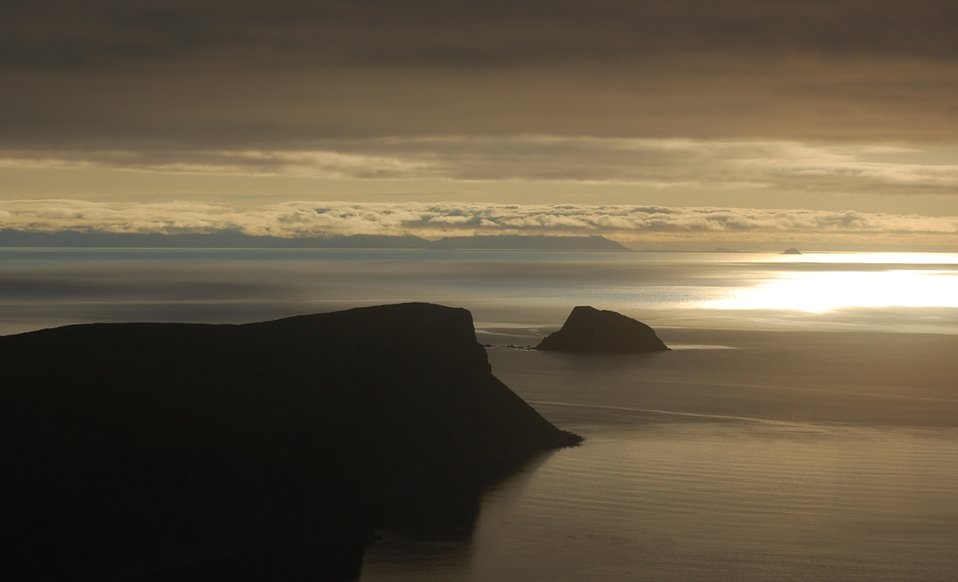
Unimak Landscapes

SE Unimak Island, Alaska Maritime National Wildlife Refuge